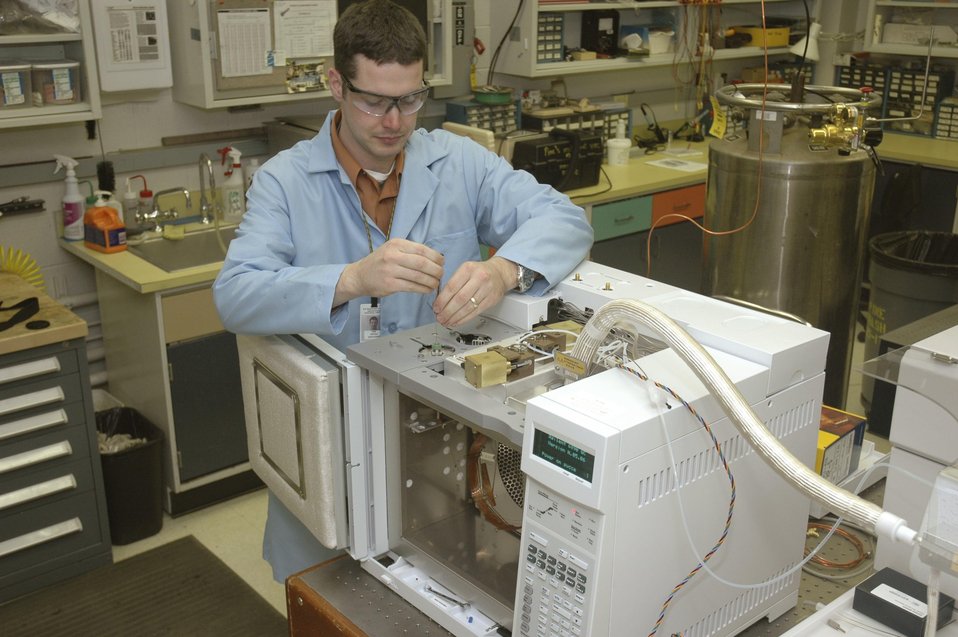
Kirk Gerdes injects a sample into NETL's new gas chromatograph-inductively coupled plasma-mass spectrometer.

The new gas chromatograph-inductively coupled plasma-mass spectrometer, an analytical instrument that will play an important role in study the effect of coal contaminants on solid oxide fuel cells. It offers part-per-billion sensitivity to compounds typically found in trace amounts in coal syngas, including arsenic, phosphorus, selenium and mercury. The instruments supports fuel cell research at the NETL to evaluate the impact on fuel cell performance and degradation of trace species found in coal syngas. The spectrometer will be mounted into a specially designed mobile test cell and taken to the Wilsonville Power Systems Development Facility to support fuel cell performance testing on coal syngas.